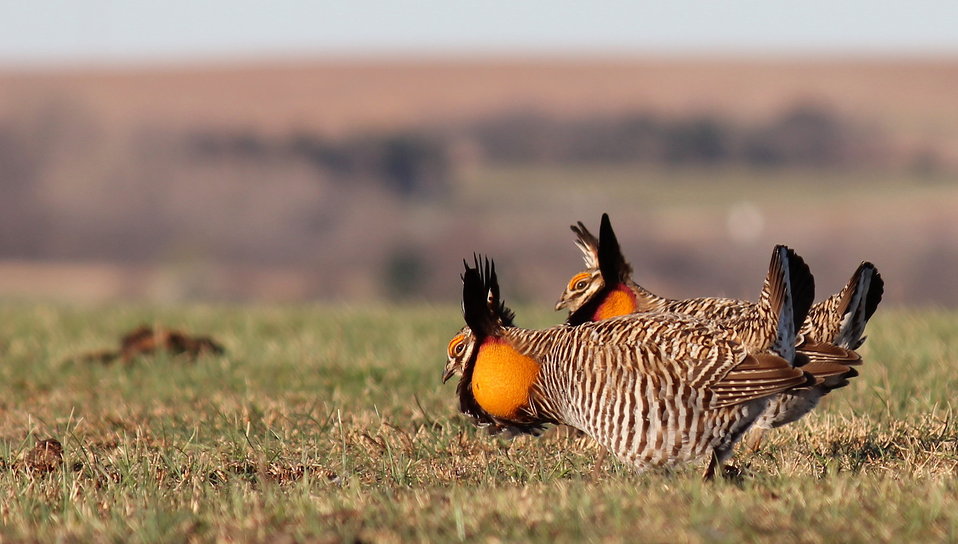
Greater Prairie-Chickens in the Flint Hills

Greater prairie-chickens on the booming grounds, putting on their best dance moves in the largest remaining block of tallgrass prairie in the world.

Photo taken on a private ranch in the Flint Hills of Kansas

Credit: Greg Kramos / USFWS

Photo Contest Entry #73